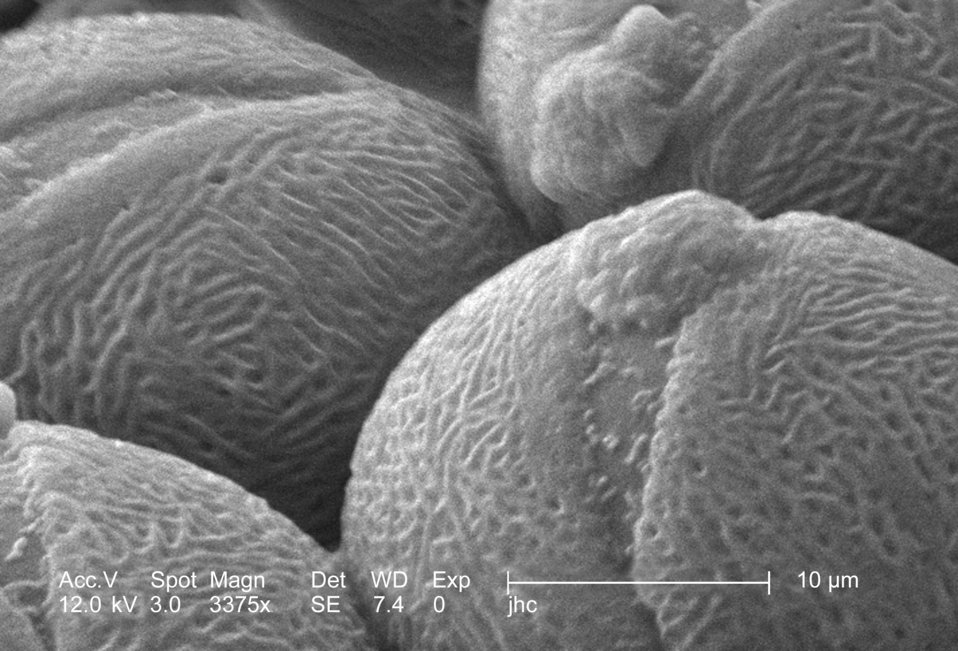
Under a high magnification of 3375x, this scanning electron micrograph (SEM) revealed some of the morphologic ultrastructure found amongst a collection of pollen found within the dehisced, or split open, anther of a yellow "Fireworks" sundrops, Oenothera fruticosa flower. The circular shape of these grains means that they still need to further dry before they are ready to be dispersed. The drying will also change their morphology, whereupon, the grains will become elliptical, or "football"-shaped. These pollen grains were of the "tricolpate" type, which means that the outer surface is traversed from pole to pole, by three symmetrically placed furrows.